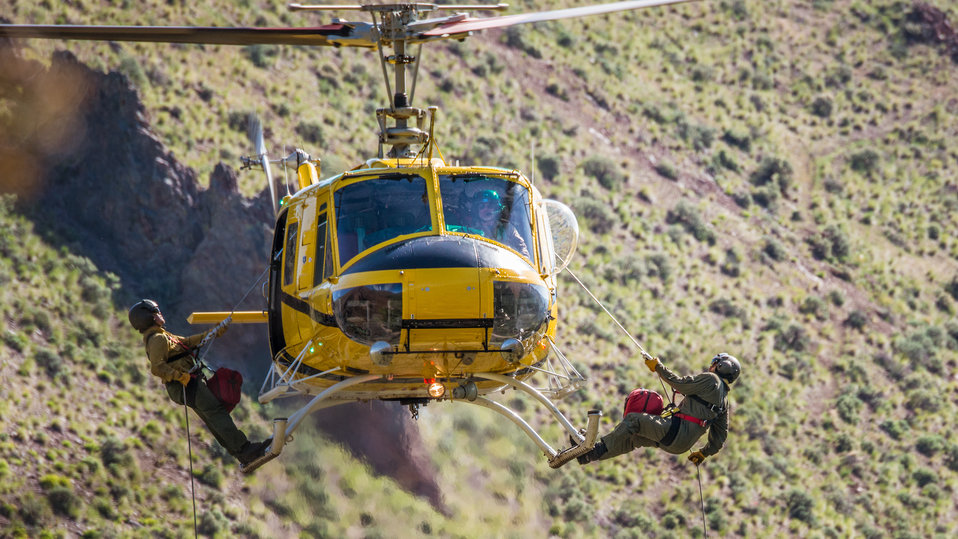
An Express's Bell 205A-1 Helicopter maintains altitude and position, both critical, for veteran wildland firefighter rappellers to descend to a landing zone in the Perreau Creek area, during the U.S. Department of Agriculture (USDA), U.S. Forest Service (USFS) National Helicopter Rappel Program’s Rappel Academy at Salmon Air Base, in Salmon, Idaho, on Thursday, May 15, 2014.